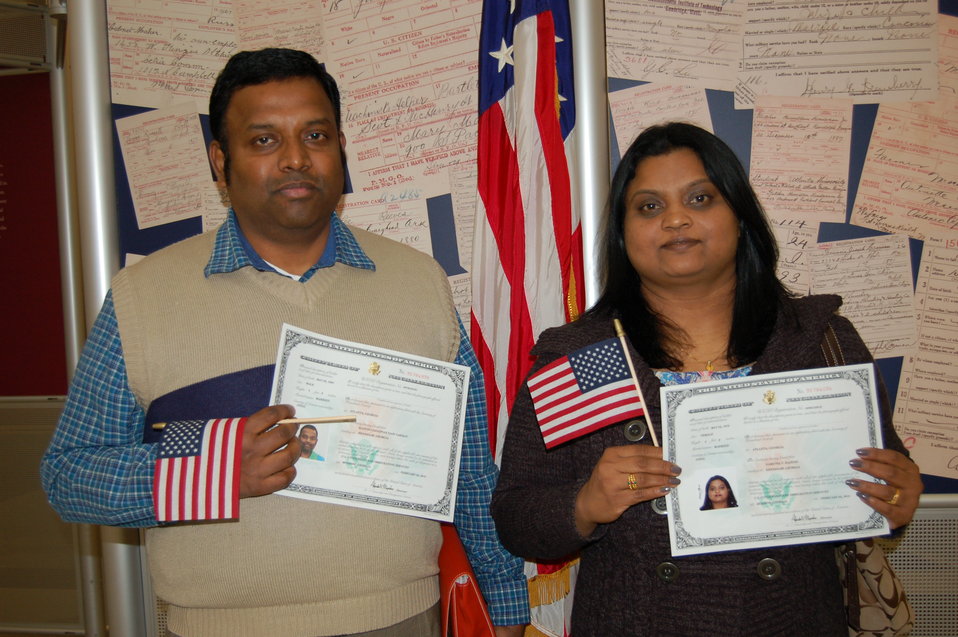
New Citizens